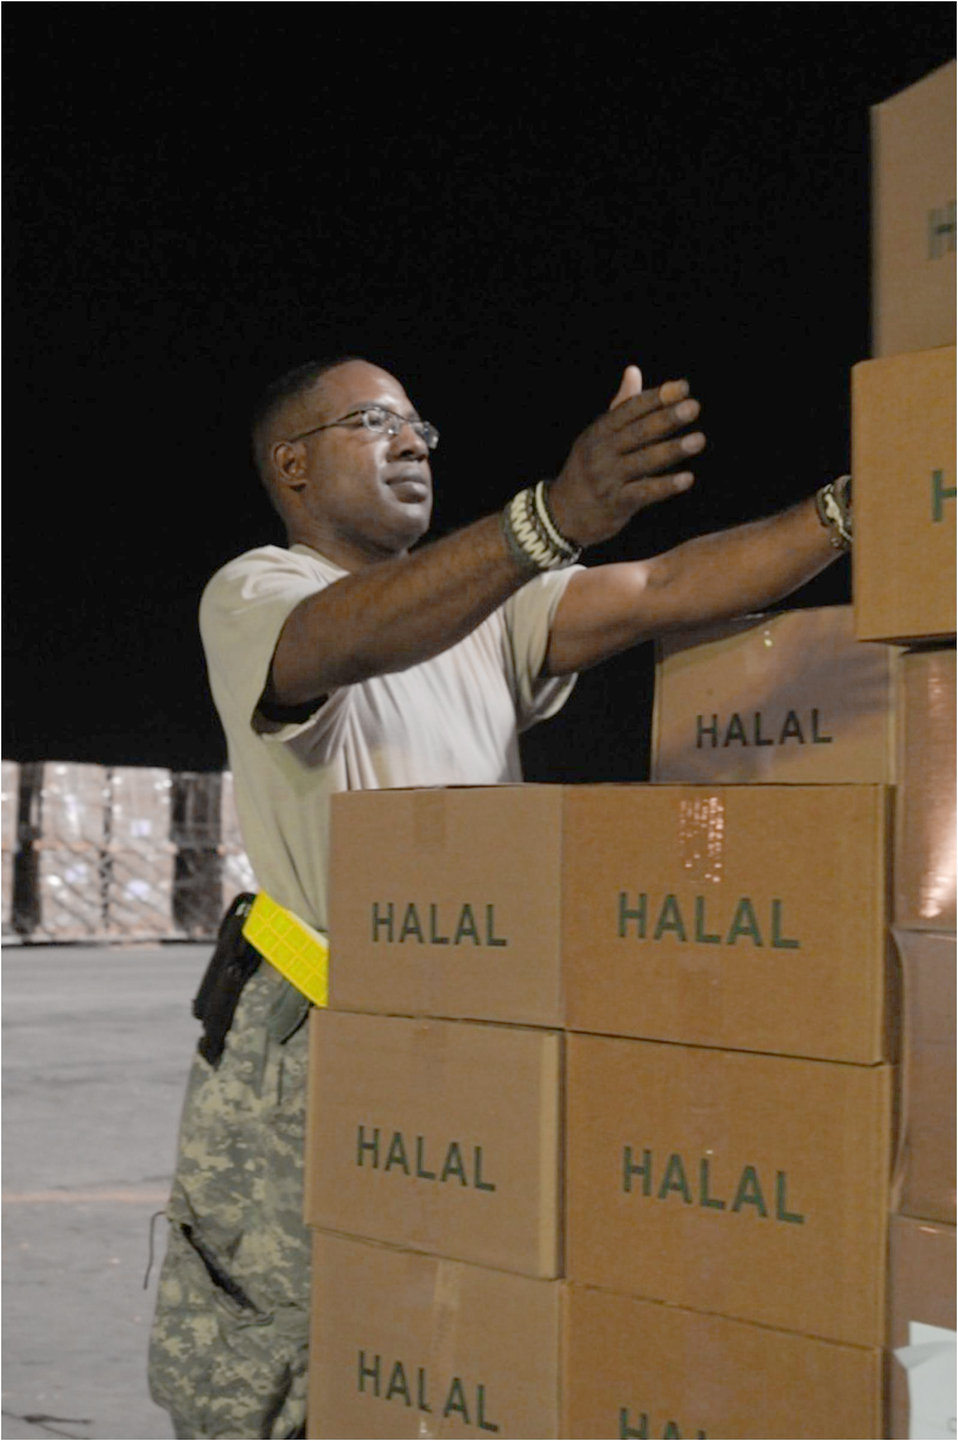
Teamwork provides relief

Army Sgt. John Lightfoot builds a pallet of halal meals Aug. 2, 2010, at Bagram Airfield, Afghanistan, for airlift into northwest Pakistan. These meals are some of the 345 thousand that have been delivered since July 31, 2010, as part of the humanitarian flood relief assistance provided to the area that's been hit by monsoon rains in recent days. Sergeant Lightfoot is a member of the 82nd Sustainment Brigade.